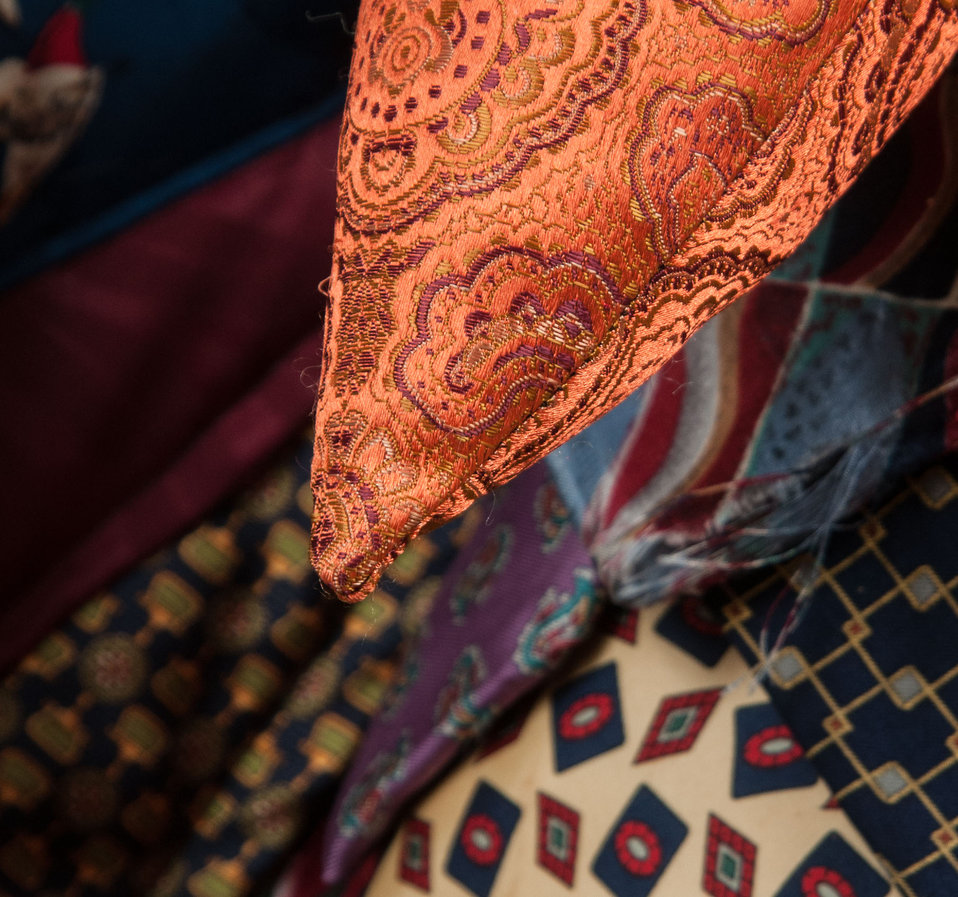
Online Viewer's Choice entries of the 2013 Art & Agriculture, Tuesday, July 9, 2013, in the South Building, Washington, D.C. Themes were expressed by employees from across the department and the contest was open to full-time and part-time USDA employees. Winning artwork will be displayed till the end of the year. U.S. Artistic expression is a creative outlet that is vital for an individual to grow and develop.